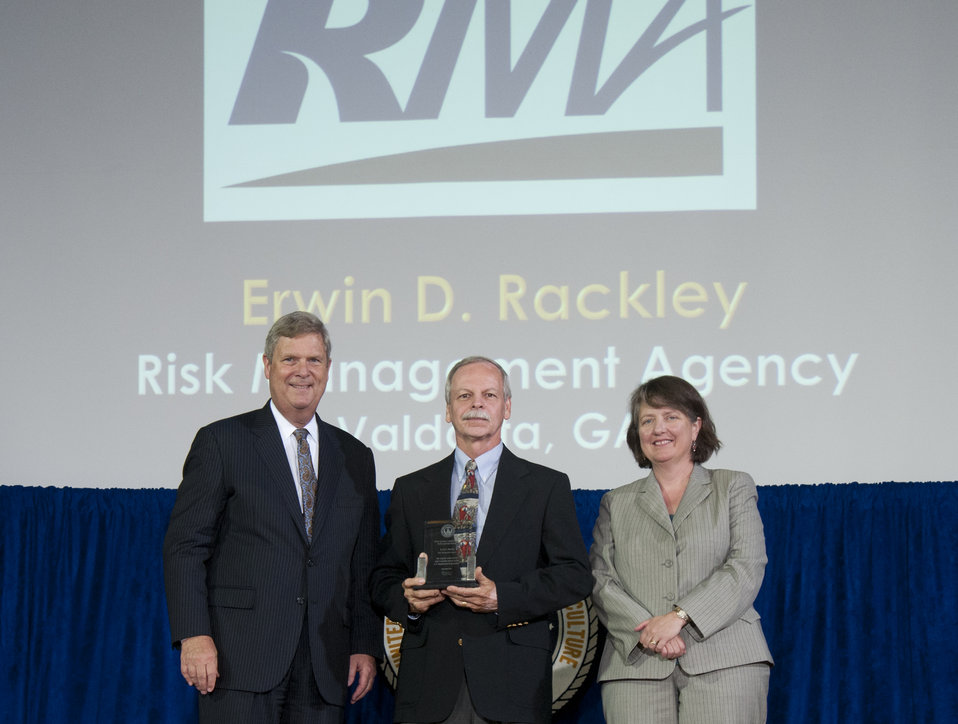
Agriculture Secretary Tom Vilsack and Agriculture Deputy Secretary Kathleen Merrigan present the Secretary’s Honor Award for Heroism and Emergency Response to Risk Management Agency (RMA) employee Erwin D. Rackley at the U.S. Department of Agriculture (USDA) 64th Annual Honor Awards Ceremony in Washington, D.C. on Wednesday, Sept. 12, 2012. Rackley received his award for outstanding heroism in performing Cardiopulmonary Resuscitation on an individual in full cardiac arrest, resulting in saving the individual’s life and allowing her to have a “second chance” at life.